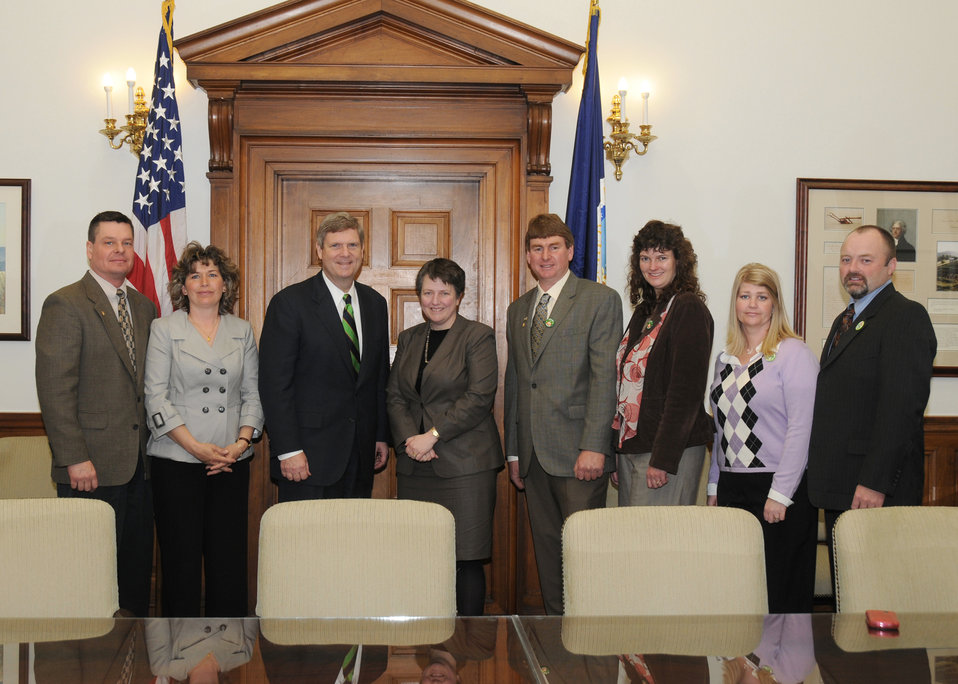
Agriculture Secretary Tom Vilsack and Agriculture Deputy Secretary Kathleen Merrigan pose with the recipients of the Outstanding Young Farmers Award at the Department of Agriculture on Wednesday, March 17, 2010. (L to R)Steve and Teresa Moore from Ohio, Agriculture Secretary Tom Vilsack, Agriculture Deputy Secretary Kathleen Merrigan, Bruce and Halle Ruddenklau from Oregon, and Brent and LuAnn Johnson from Iowa. USDA Photo 10di1270-21